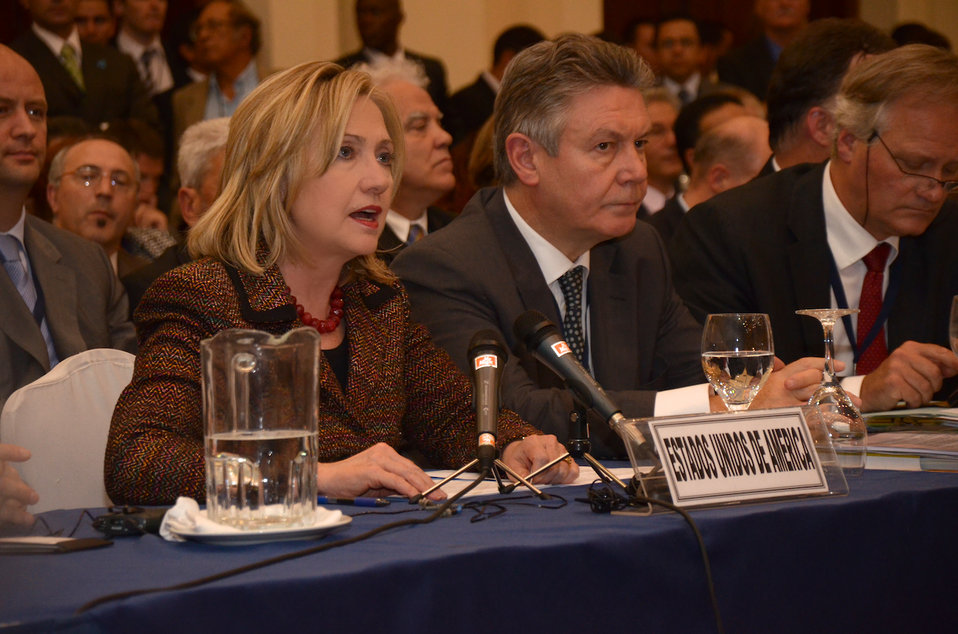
Secretary Clinton Speaks at the SICA

U.S. Secretary of State Hillary Rodham Clinton speaks at the Central American Security Conference (SICA) in Guatemala City, Guatemala, on June 22, 2011. Sitting to Secretary Clinton's right is EU Trade Commissioner Karel de Gucht.